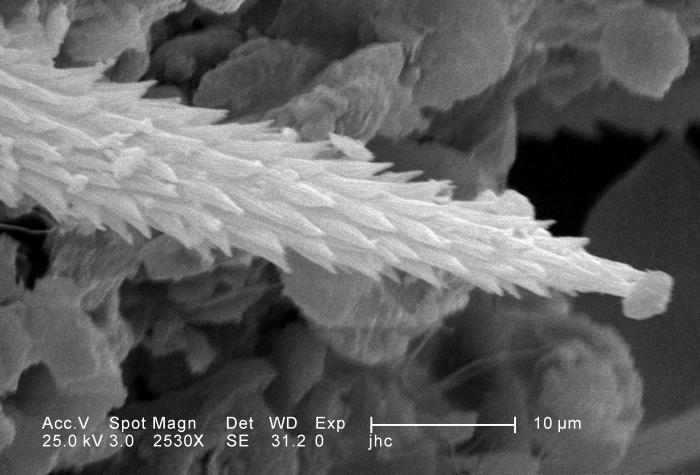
Under a moderately-high magnification of 2530X, approximately four times that of PHIL 11808, this scanning electron micrograph (SEM) revealed the ultrastructural features found on the ventral exoskeletal surface of this larval-staged antlion's mandibles. In this particular view, a single sensorial 'hair', or seta, is highlighted These setae, are not the hairs that are common to mammals, but are composed of chitin, as is the exoskeleton itself, and are sensorial in nature, providing the insect larva with environmental data, including tempurature, tactile stimuli, and chemical changes.